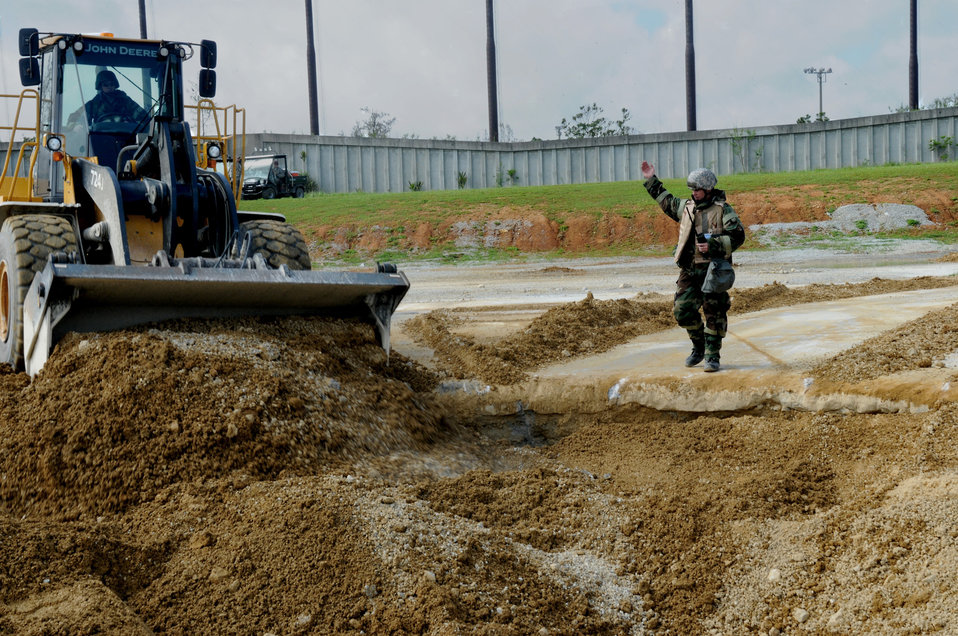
Silver Flag

Tech. Sgt. Mark Farmer directs a forklift June 28, 2011, during Silver Flag at Kadena Air Base, Japan. Sergeant Farmer is a pavement and heavy-equipment operator assigned to the 647th Civil Engineer Squadron at Joint Base Pearl Harbor-Hickam, Hawaii.